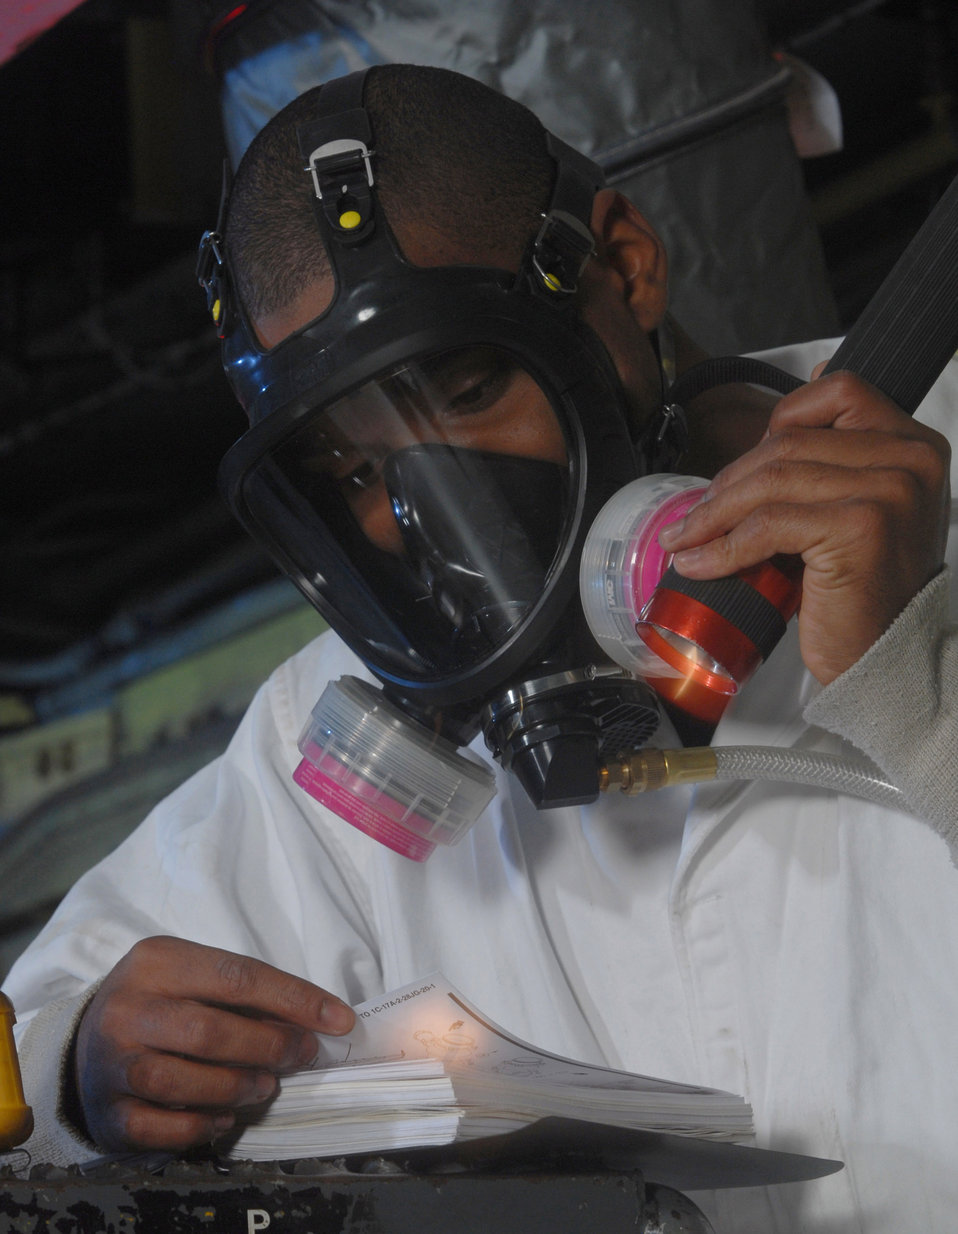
By the book

Senior Airman David Skannal refers to a technical order before inspecting a fuel tank of a KC-135 Stratotanker Jan. 9 at March Air Reserve Base, Calif. Airman Skannal is a fuel cell technician from the 452nd Maintenance Squadron.